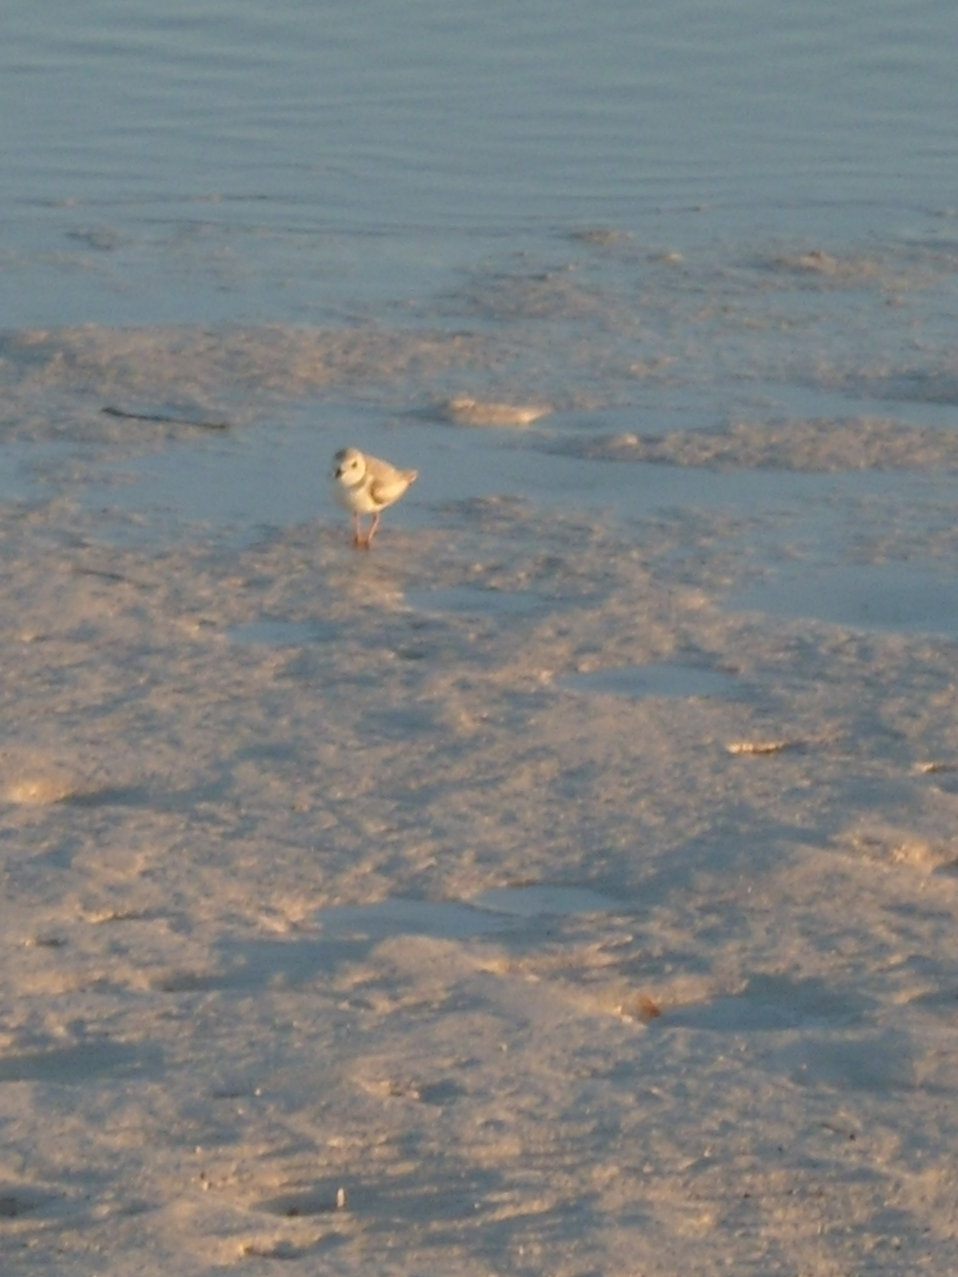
Piping plover on Great Inagua Island